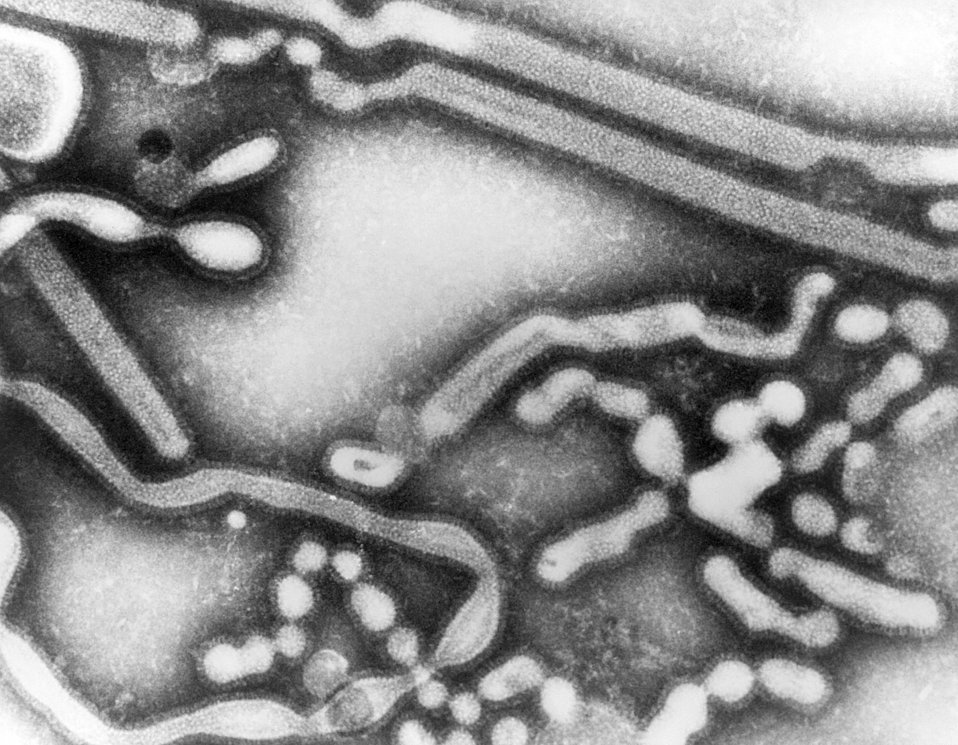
This transmission electron micrograph (TEM) depicts numbers of influenza A virions while in their early passage growth phase.